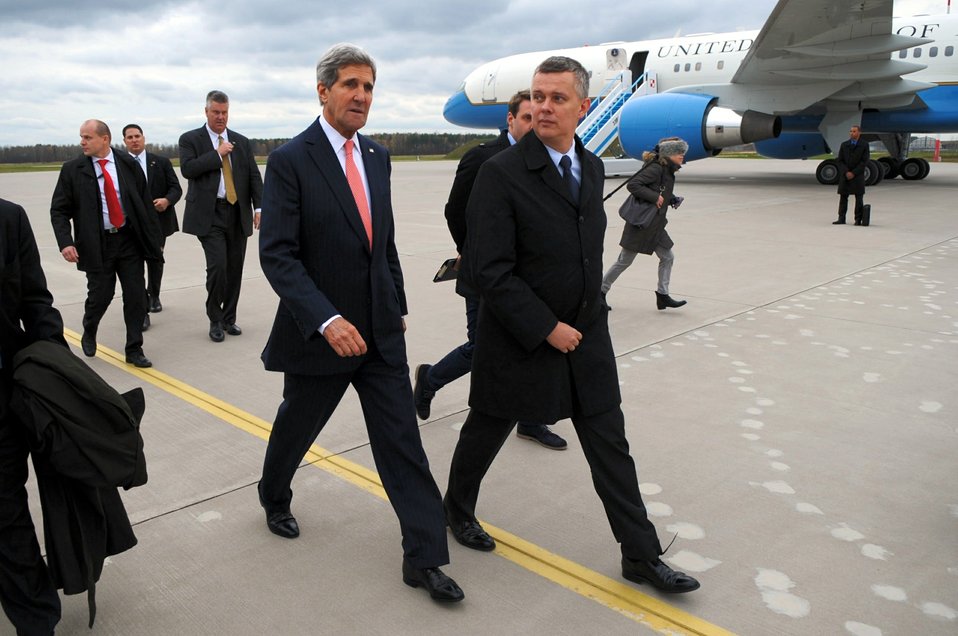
Secretary Kerry Is Greeted By Polish Defense Minister Siemoniak at the Lask Airbase

Polish Defense Minister Tomasz Siemoniak walks with U.S. Secretary of State John Kerry after his arrival at the Lask Military Airbase in Poland for a military discussion on November 5, 2013.